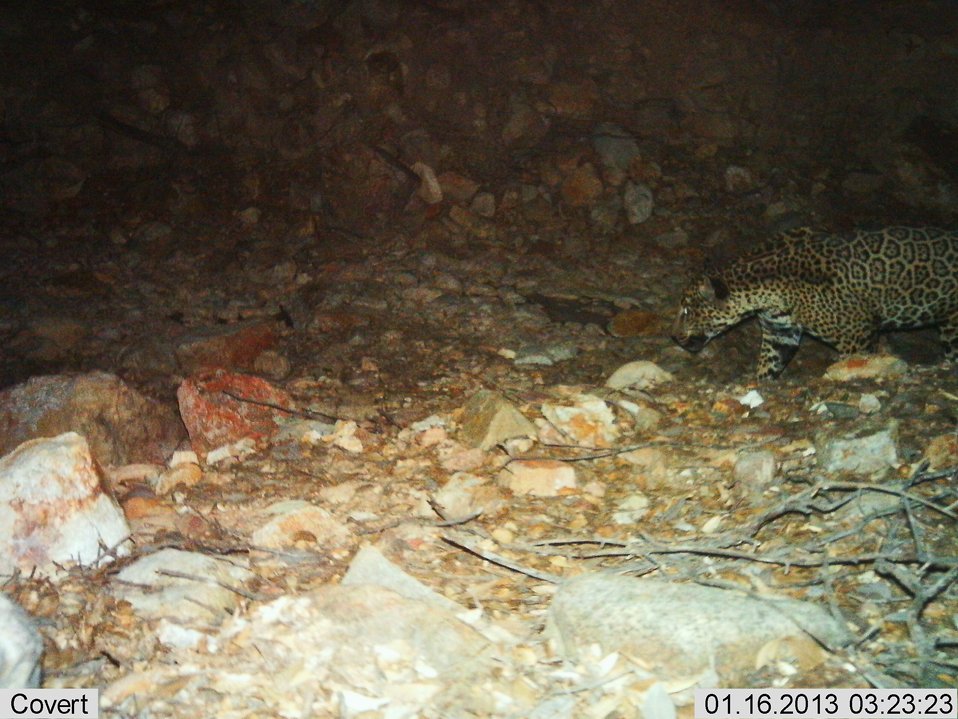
Male jaguar photographed by automatic wildlife cameras in the Santa Rita Mountains on January 16, 2013 as part of a U.S. Fish and Wildlife Service/Department of Homeland Security-funded jaguar survey conducted by University of Arizona.